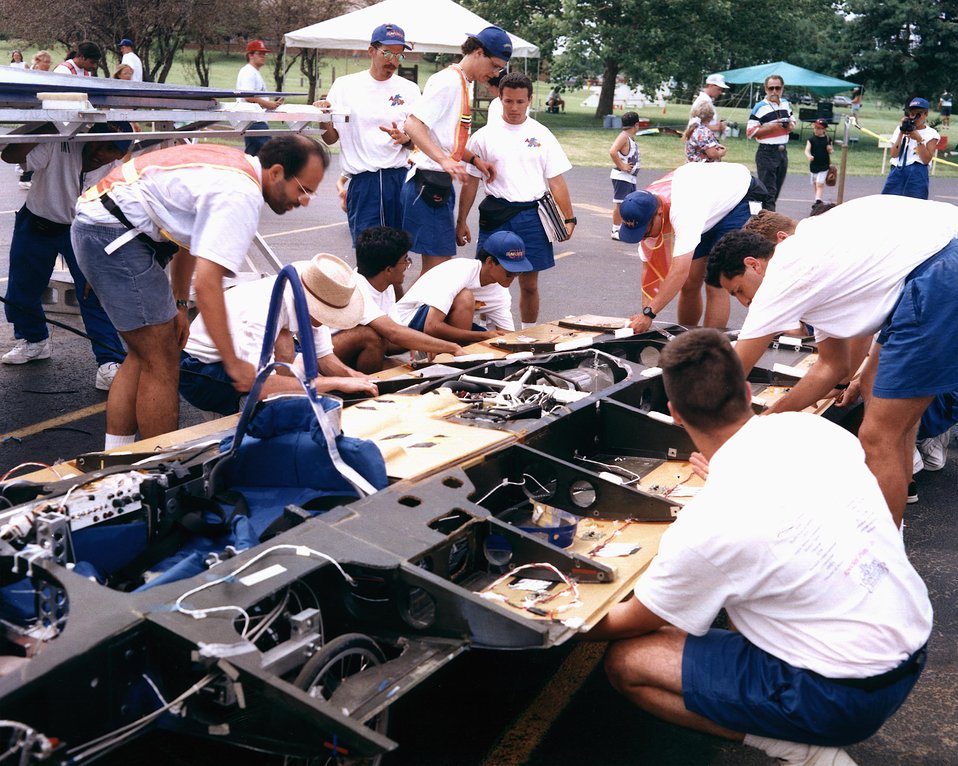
TEAM FROM GEORGE WASHINGTON UNIVERSITY, WASHINGTON, DC WORKING ON THEIR VEHICLE, GW.